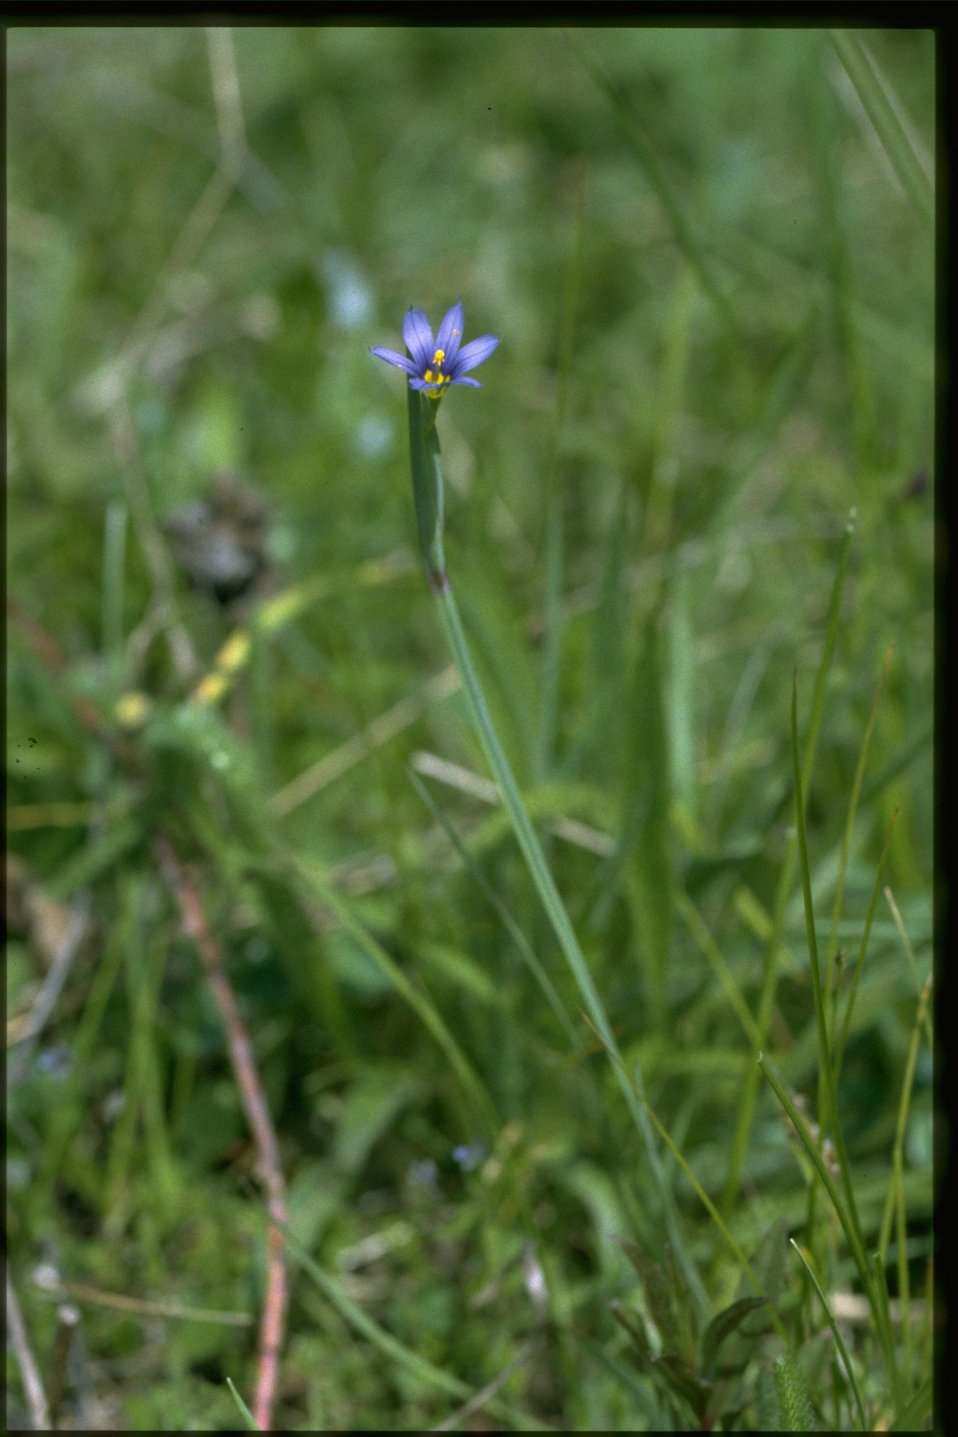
Farshot of Sisyrinchium idahoense.